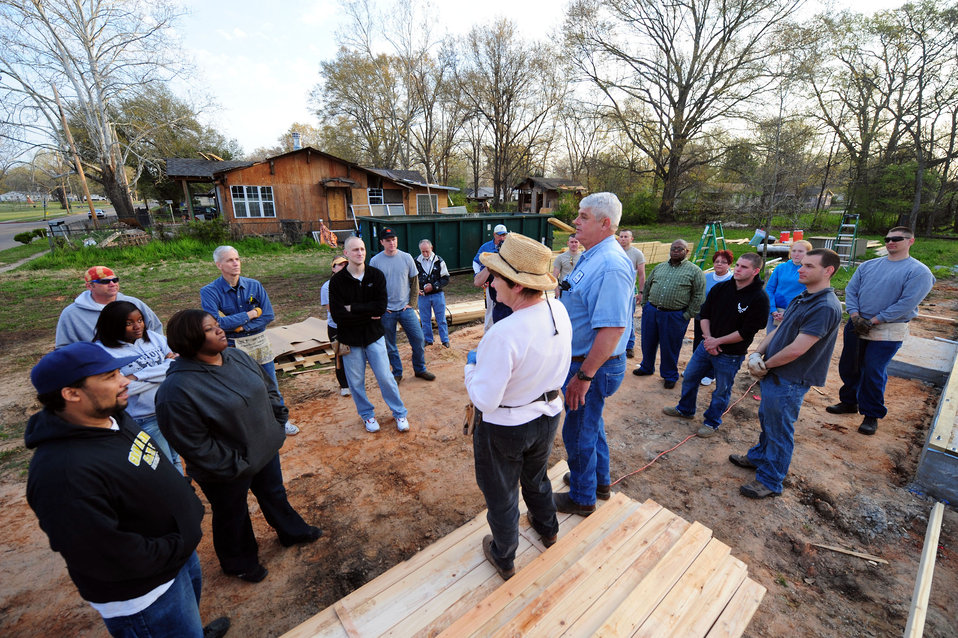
Barksdale Airmen build homes for needy families

Members of the local community and Airmen from Barksdale Air Force Base, La., receive a safety briefing from Habitat for Humanity volunteers before beginning construction of a new home March 20, 2010, in Shreveport, La. More than 20 Barksdale AFB Airmen from the 2nd Civil Engineer Squadron volunteered to help with the construction.